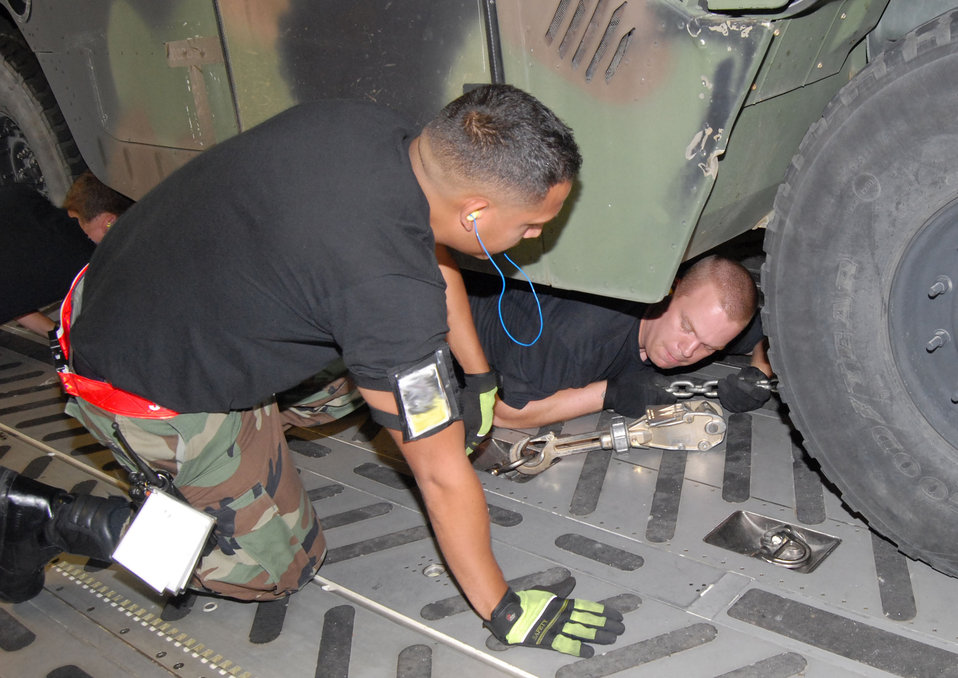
Pope aerovac squadron deploys for Hurricane Dean

Members of the 3rd Aerial Port Squadron at Pope Air Force Base, N.C., tie down a Humvee that was deployed to Brownsville, Texas, Aug. 19 along with about 40 members of the 43rd Aeromedical Evacuation Squadron in preparation for Hurricane Dean relief efforts.